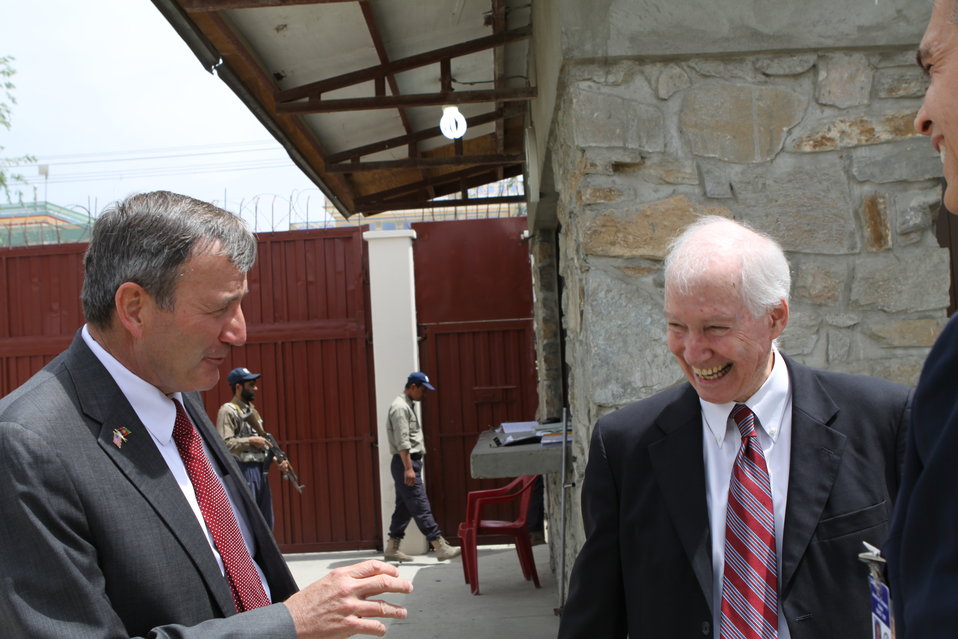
100526 AUAF Graduation 016